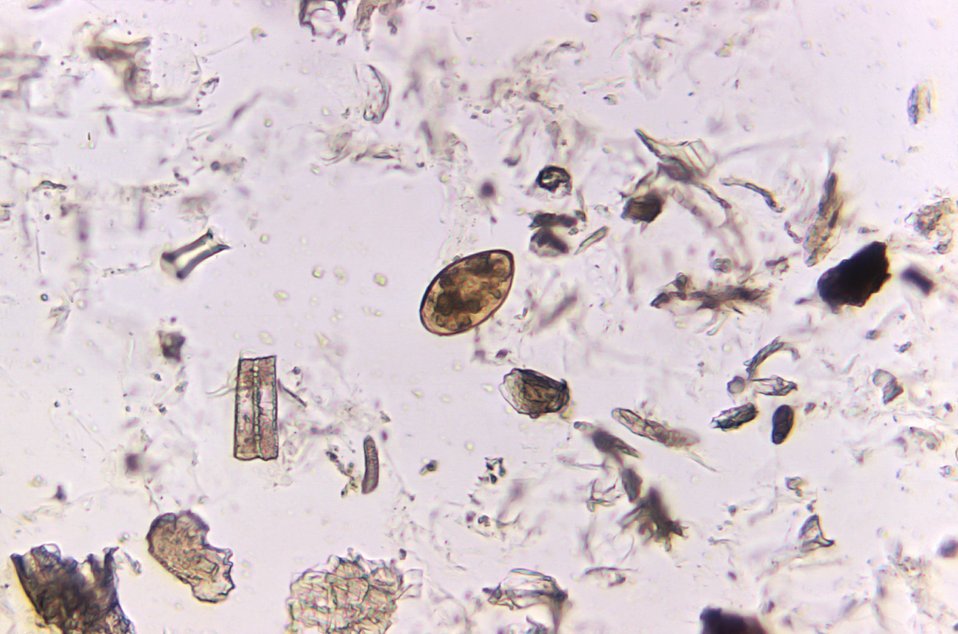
Magnified 500X, this photomicrograph of an unstained, formalin-preserved stool specimen mount, revealed the presence of a Paragonimus westermani termatode egg. See PHIL 3415 for the depiction of the following life cycle.